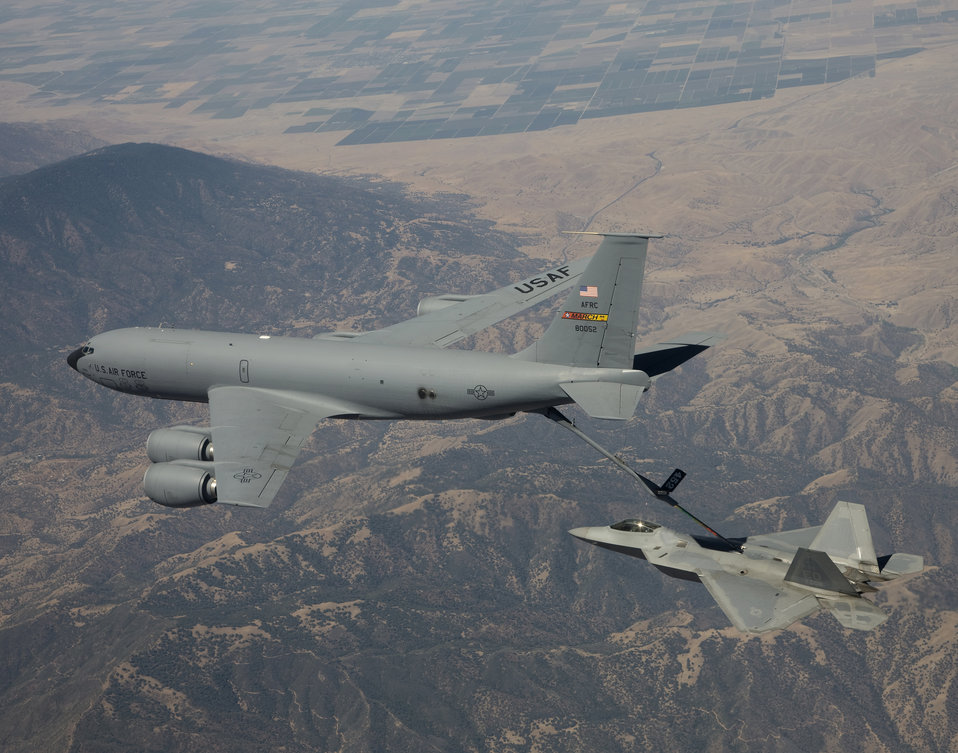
F-22 refuels with synthetic fuel

An F-22 Raptor from Edwards Air Force Base, Calif., receives synthetic fuel from a KC-135 Stratotanker Aug. 28 during an aerial refueling test using an alternative jet engine fuel. The KC-135 Stratotanker is from March Air Reserve Base, Calif.